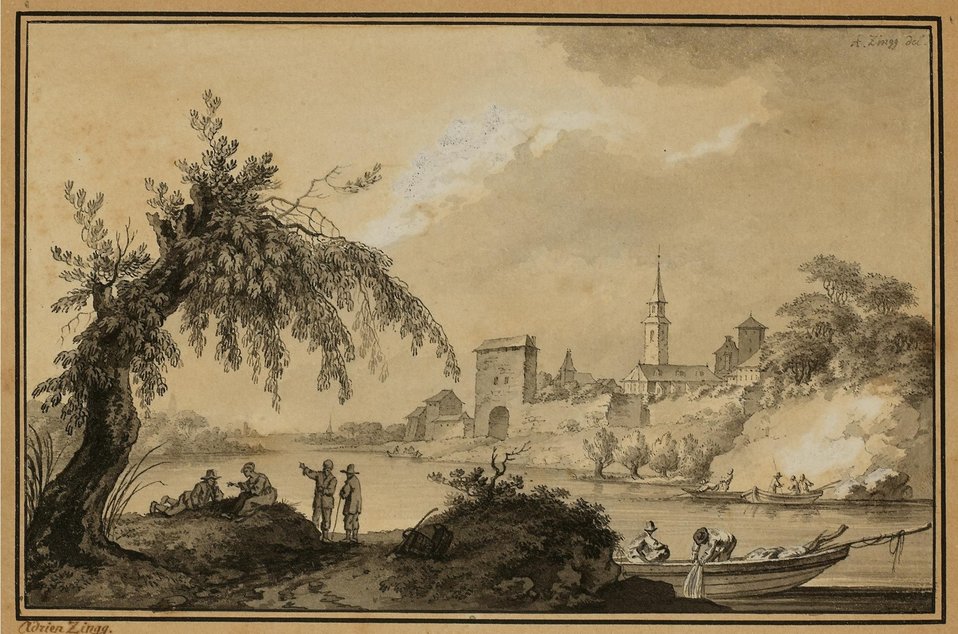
Adrian Zingg - Schweizer Landschaftsimpressionen 02